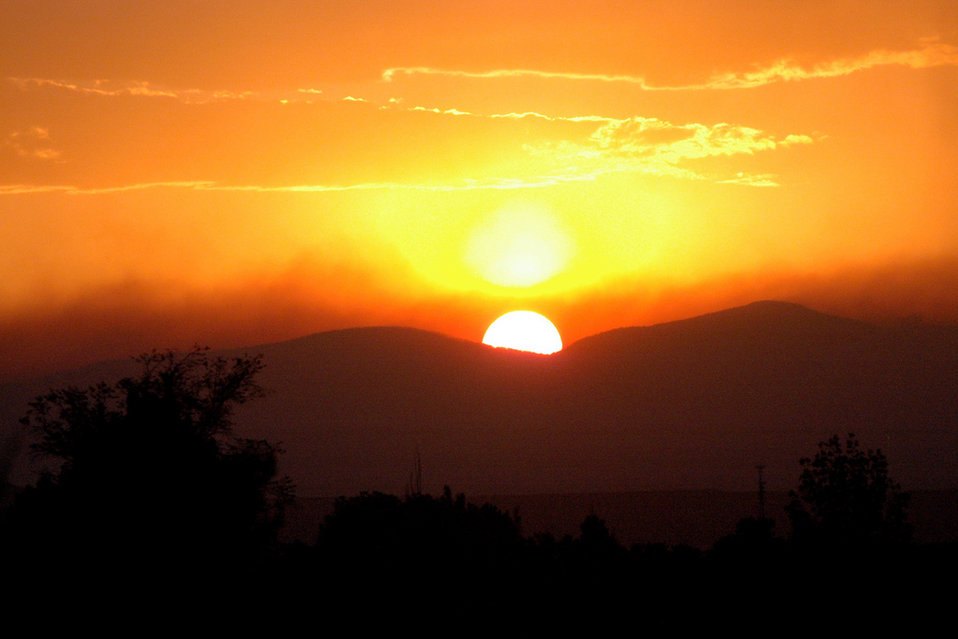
Smokey sunset over the Jemez, the sun descends behind Los Alamos and the Jemez Mountains as seen from Santa Fe- Thursday evening, June 30th.

The Las Conchas Fire started on June 26, 2011, it was caused by a fallen tree that caught fire after it came in contact with power lines nearby. The fire had burned over 121,000 acres, including 63 residences. At no time were hazardous materials in danger at Los Alamos National Laboratory. The lab was closed for a week and reopened on July 6th.